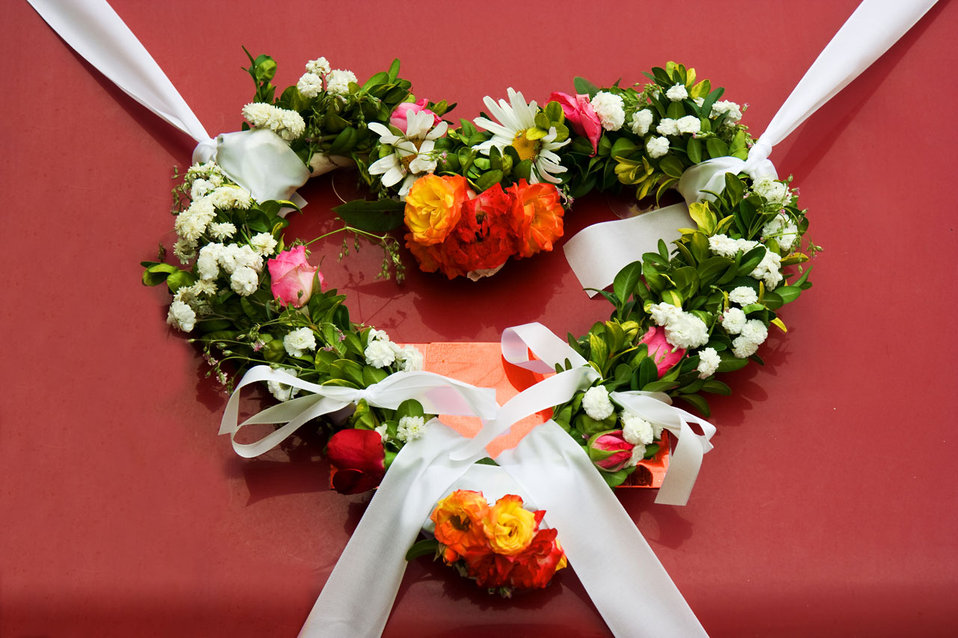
Flower heart

A heart made from various flowers on car bonet.